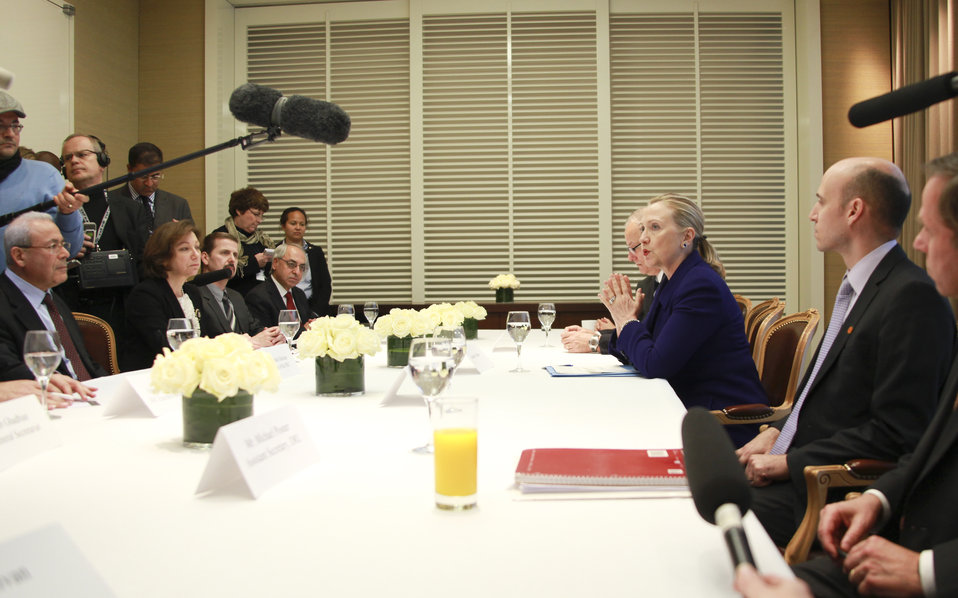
Meets With Syrian Opposition Leaders

U.S. Secretary of State Hillary Rodham Clinton meets with representatives of the Syrian National Council in Geneva, Switzerland, on December 6, 2011.